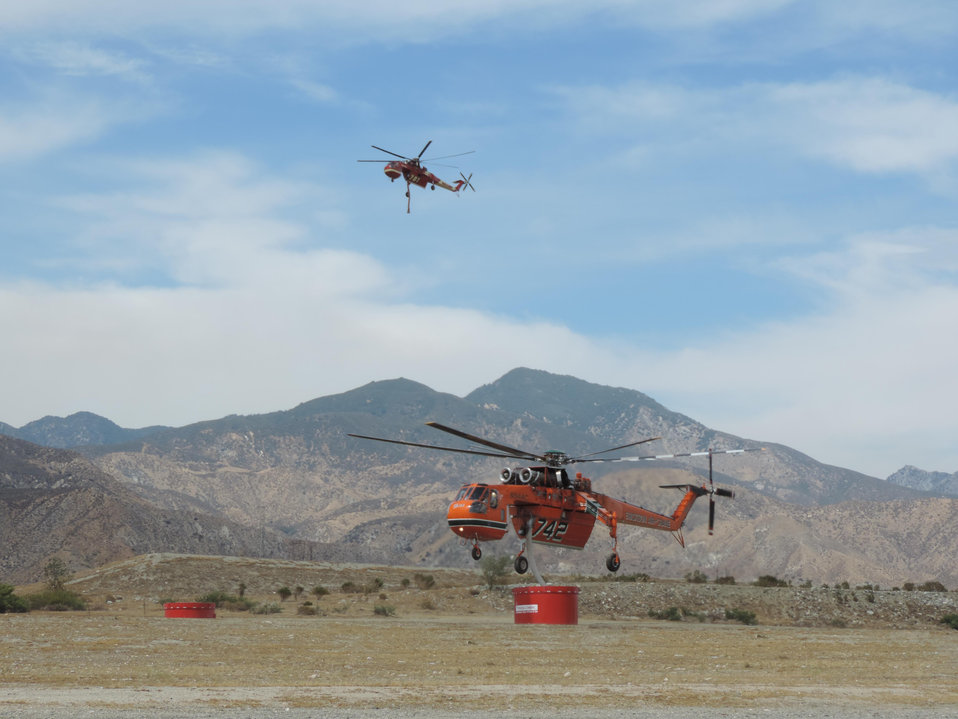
A helitanker fills up with fire retardant for use on the Hathaway Fire on Jun. 11, 2013. The Hathaway Fire is east of Hathaway Canyon on the northern portion of the Morongo Indian Reservation in the San Gorgonio Wilderness near Palm Springs, CA began on started Jun. 9, 2013 and the cause is still to be determined. The fire has burned approximately 3, 825 acres and is 95% contained as of Jun. 25, 2013.